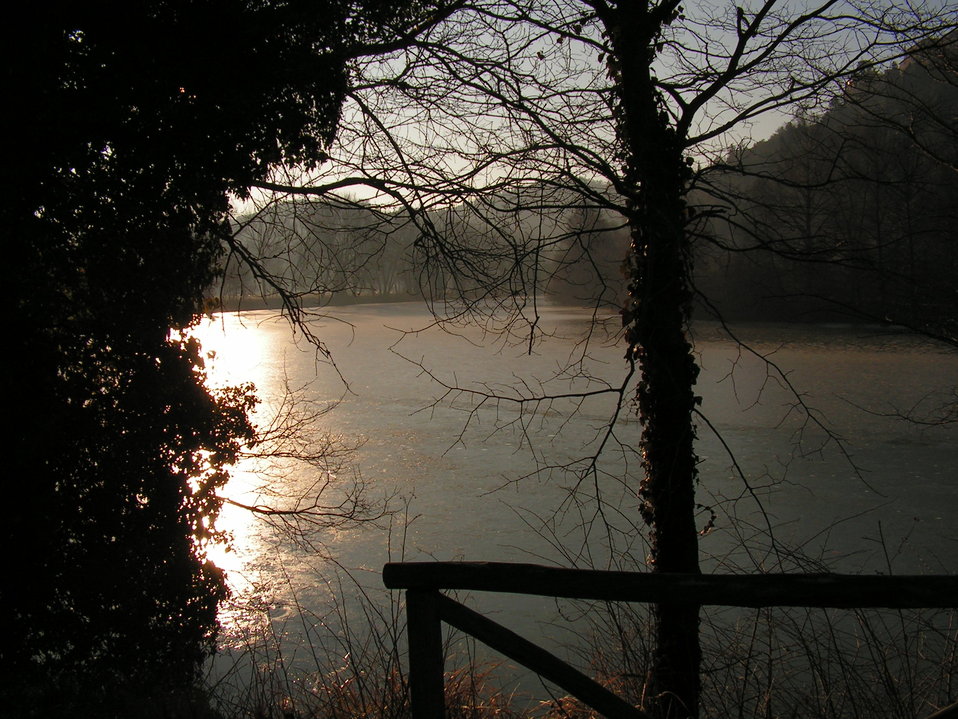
Italiano: Riccardo Passagrilli Scorcio del Rio Grande - Amelia Italia